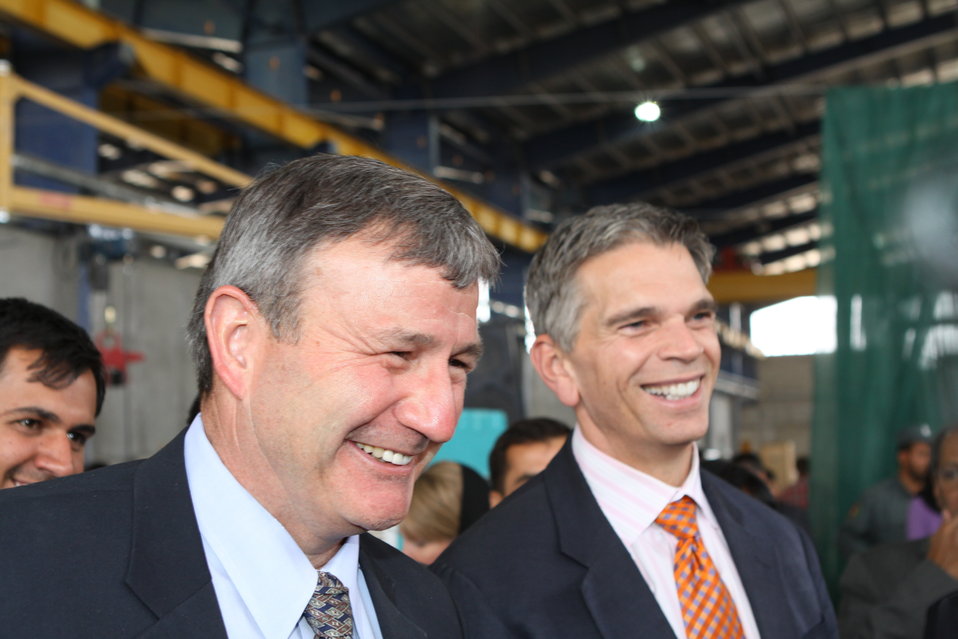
100525 Hirat Marble Conference 465